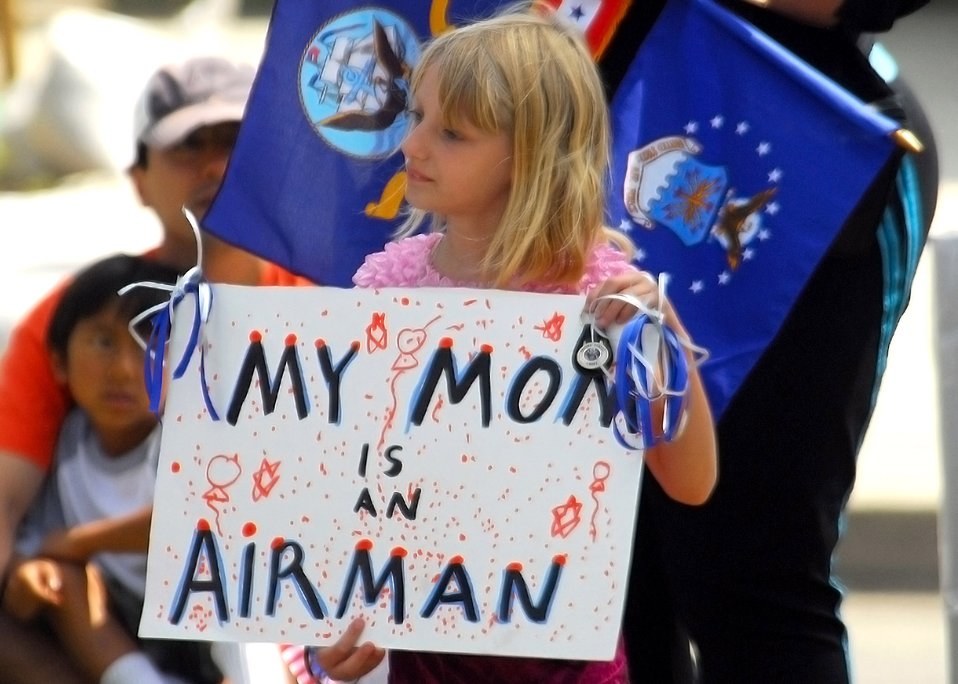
'I'm proud of my mom'

A young girl shows support for her mother May 19 during the 48th Annual Armed Forces Day parade in Torrance, Calif.